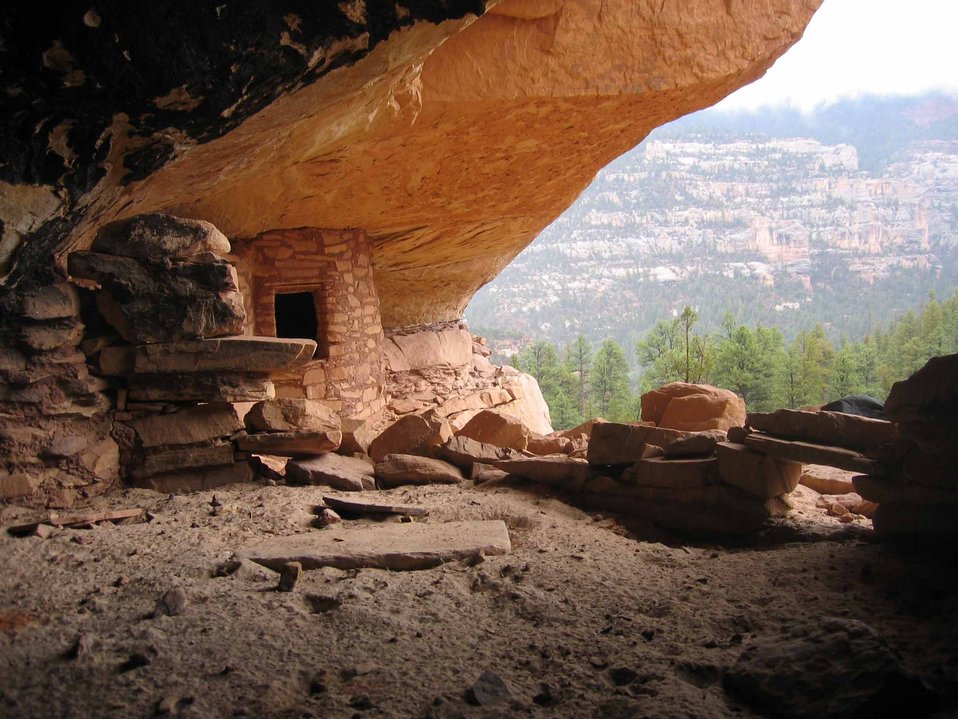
Wilderness photos3

Wilderness areas, such as Dark Canyon Wilderness Area, are often preserved for their cultural and historical significance. Dark Canyon was once home to a small segment of the widespread Anasazi Indians. The area is extraordinarily beautiful. Please remember it is against the law to remove or disturb any archaeological resources you may encounter.